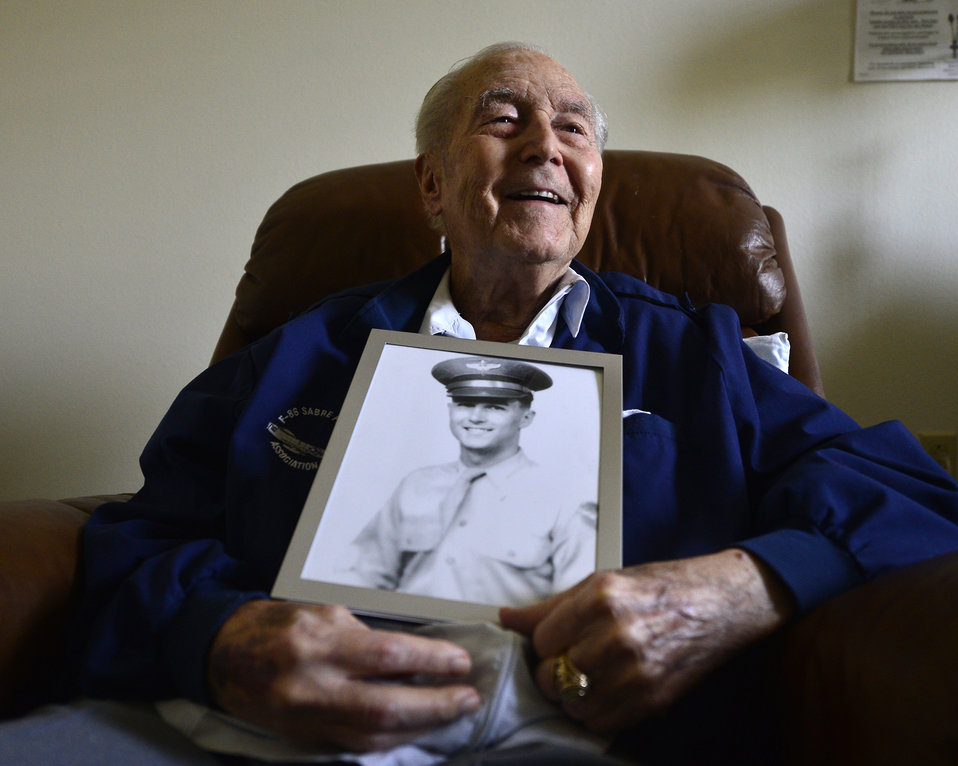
Double Ace Photos

Retired Col. Ralph Parr flew a P-38 Lightning in World War II and an F-86 Sabre during the Korean and Vietnam Wars. He is the only military member to be award the Distinguished Service Cross and the Air Force Cross.